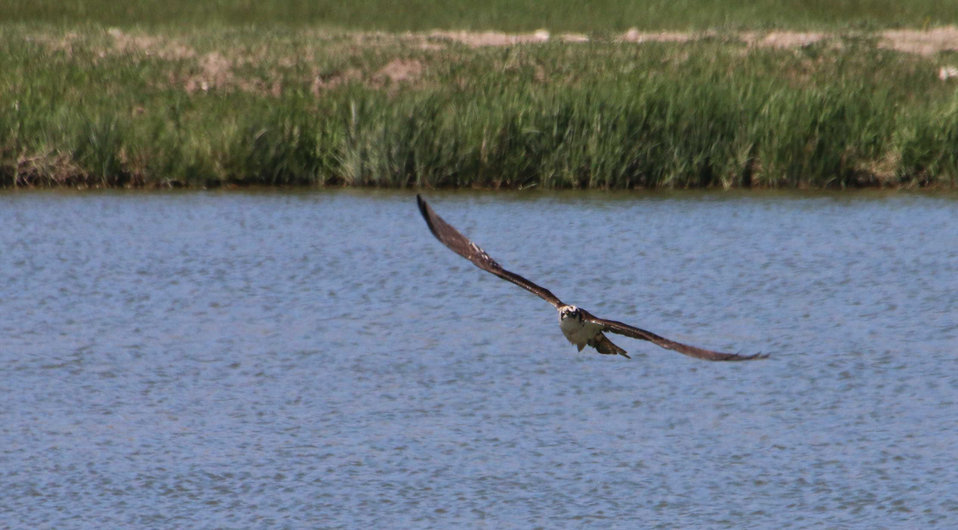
A Unique Raptor

Unlike other raptors, osprey can dive into water to catch fish.

Credit: USFWS / Ann Hough, National Elk Refuge volunteer